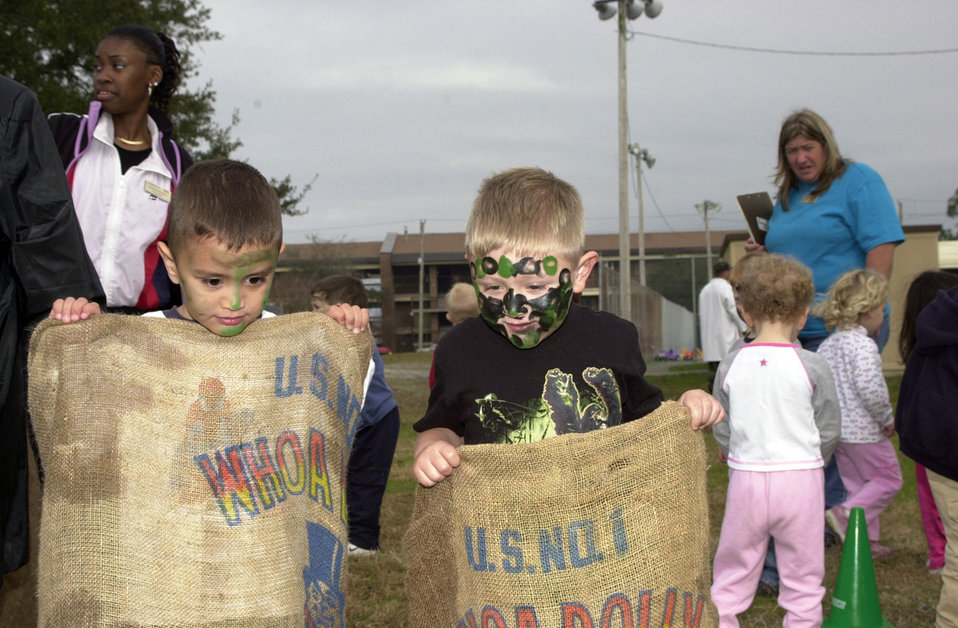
Children experience 'deployment' firsthand

TYNDALL AIR FORCE BASE, Fla. (AFPN) -- Isaiah Lopez (left) and Ronin Davis manage one of the obstacle course challenges of hopping along in burlap bags.